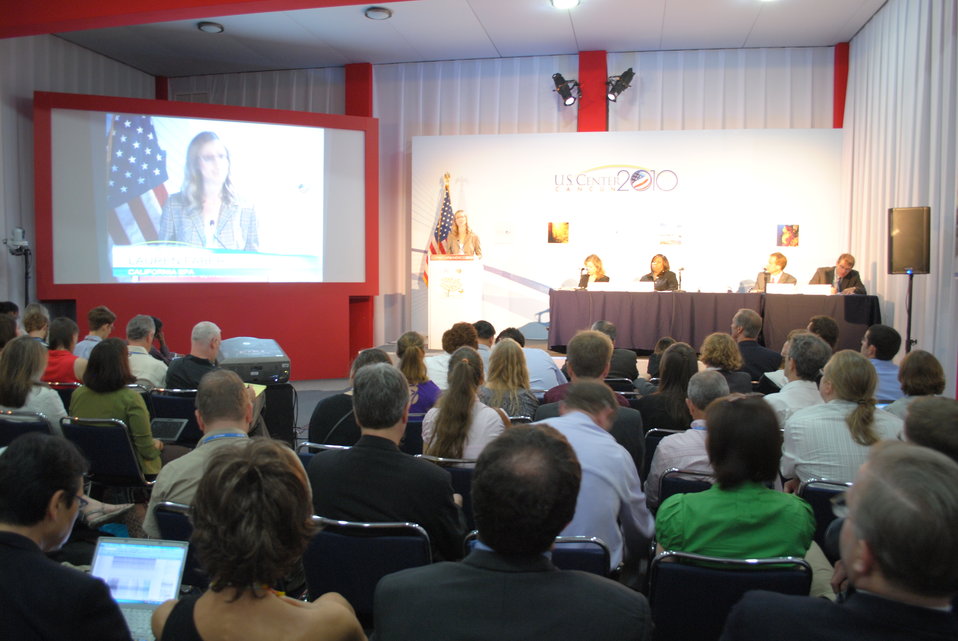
U.S. State and Regional Climate and Energy Policy Leaders Address the U.S. Center

Panelists on the U.S. State and Regional Climate and Energy Policy Leadership panel, left to right, Georgetown Climate Center Executive Director Vicki Arroyo, U.S. Department of State Special Representative Reta Jo Lewis, Illinois Environmental Protection Agency Director Doug Scott, and New York State Department of Environmental Conservation Assistant Commissioner J. Jared Snyder respond to questions from the audience at the U.S. Center at COP-16 in Cancun, Mexico, on December 6, 2010.